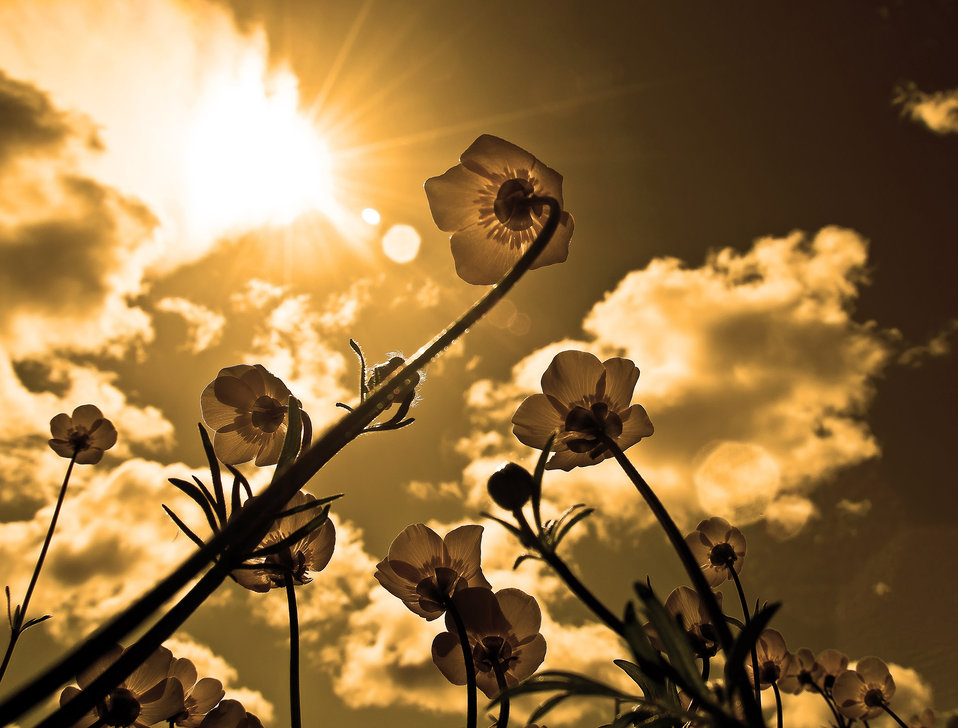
Nice flowers.